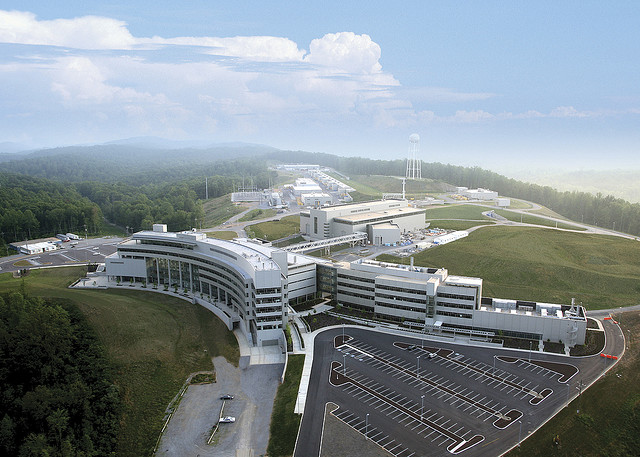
SNS aerial

The Spallation Neutron Source was completed in Oak Ridge in 2006. The $1.4 billion facility was completed on time and on schedule. It is the world’s largest and most advanced center for advanced materials studies.